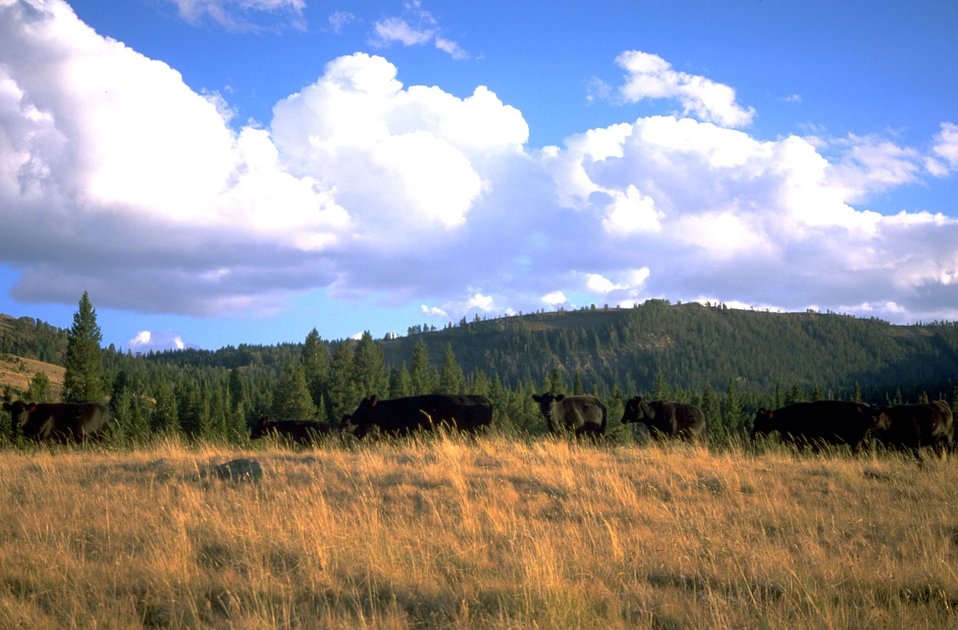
Cows grazing on sun-soaked grass with tree-covered hills in the background and descriptive cloud formations above